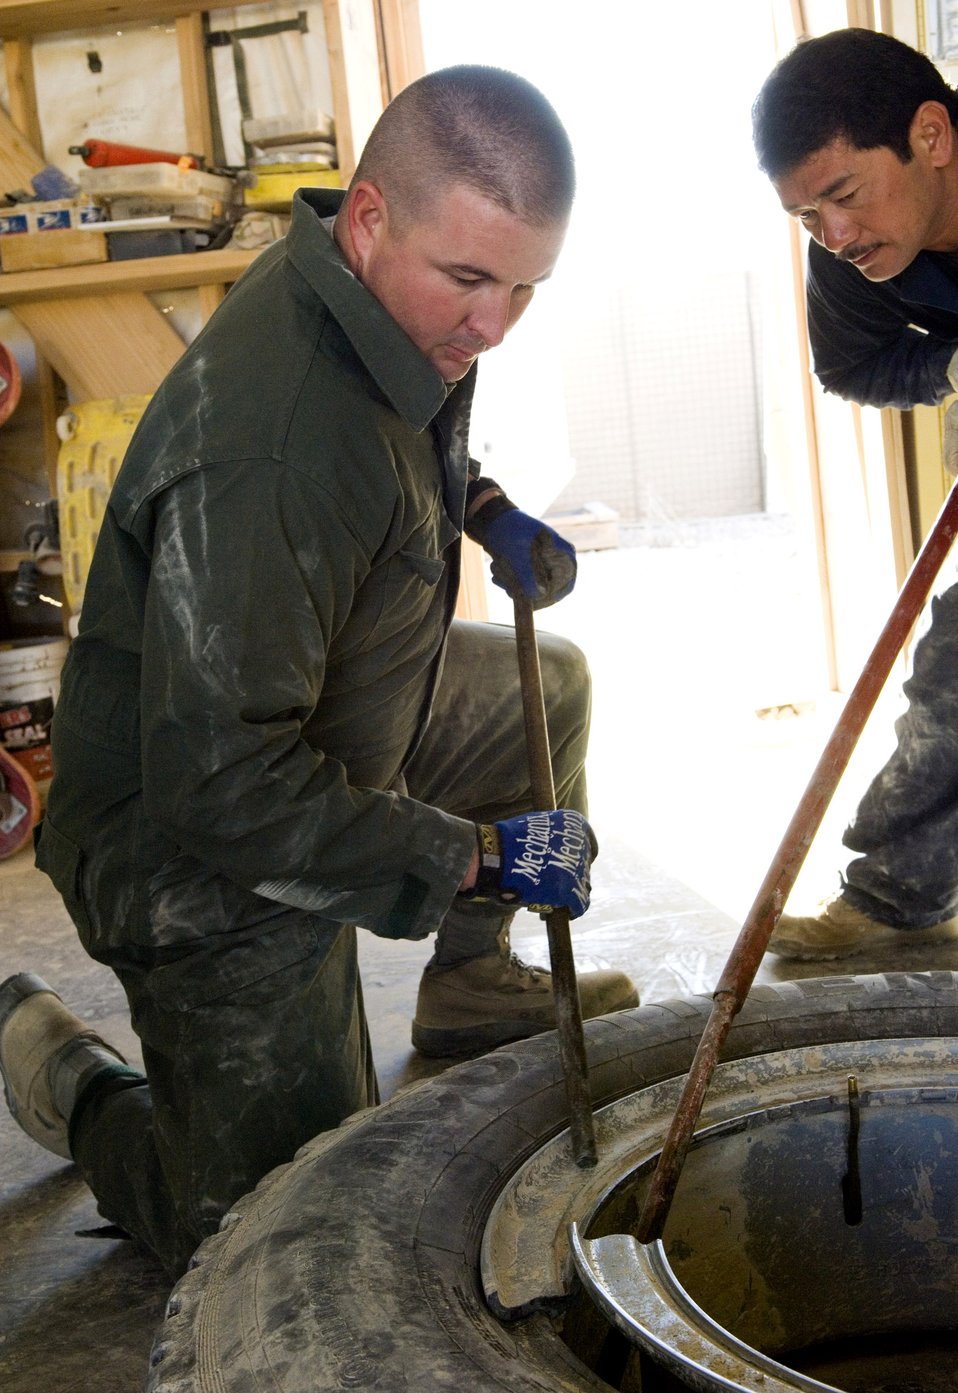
Air Force engineers improve Marine quality of life in Iraq

Senior Airman Matthew Byrd works with a contractor to place a three-piece wheel back on a recently repaired tire Nov. 22 at Al Asad Air Base, Iraq. Airman Byrd, a 557th Expeditionary REDHORSE vehicle maintenance technician, is deployed from Barksdale Air Force Base, La.